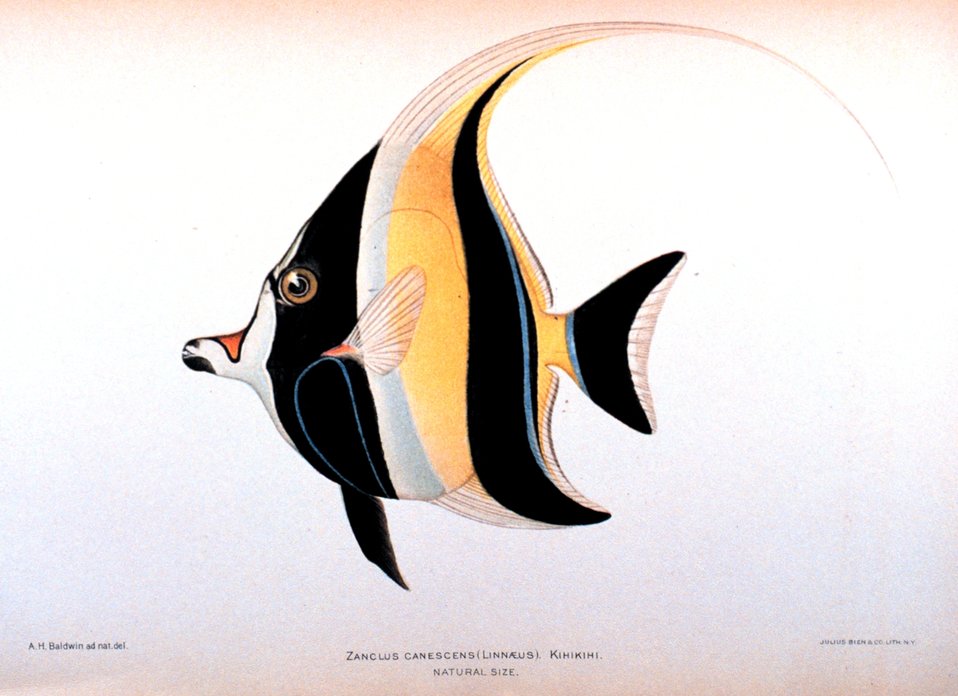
Zanclus canescens (Linnaeus). Kihikihi. In: 'The Shore Fishes of the Hawaiian Islands, with a General Account of the Fish Fauna', by David Starr Jordan and Barton Warren Evermann. Bulletin of the United States Fish Commission, Vol. XXIII, for 1903. Part I. P. 574, Plate LVII.